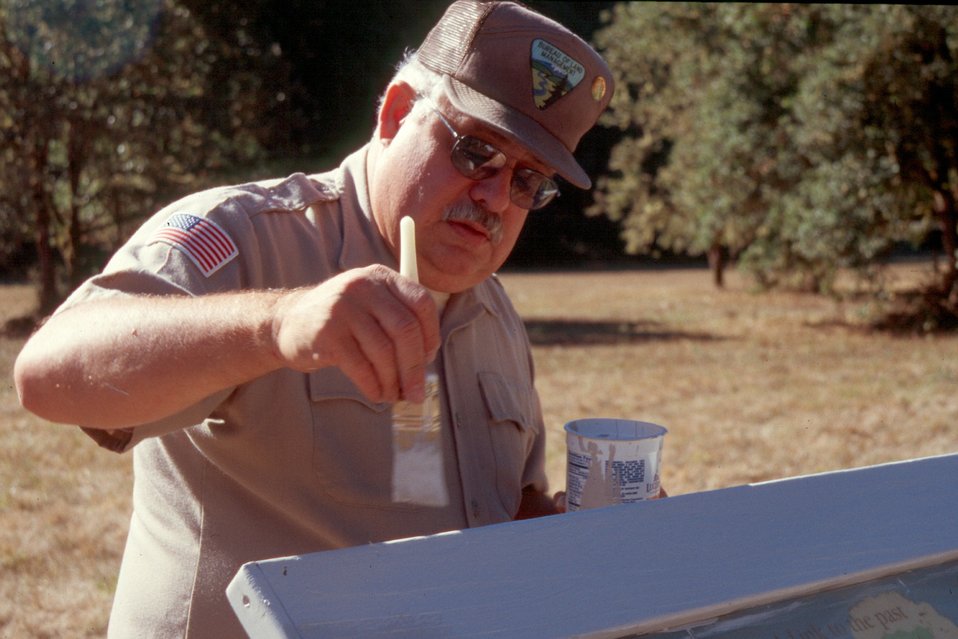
BLM employee Chuck Fairchild helps restore an interpretation sign